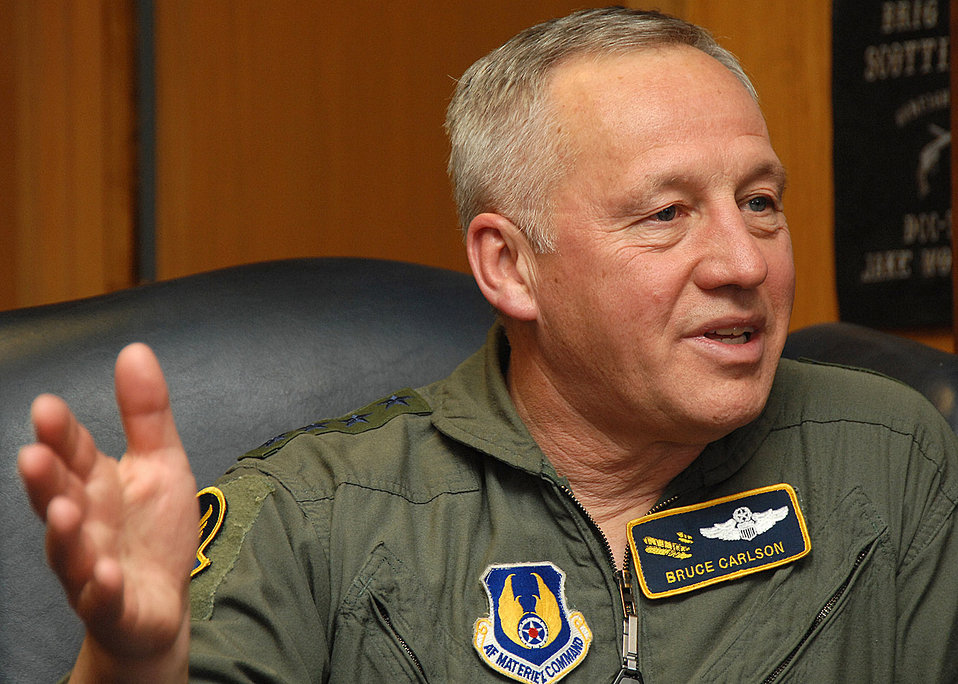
AFMC leader discusses command's war contributions

Gen. Bruce Carlson discusses the contributions of Airmen from Air Force Materiel Command toward the war on terrrorism Feb. 21 at Kirtland Air Force Base, N.M. The AFMC commander visited Airmen throughout Southwest Asia in January.